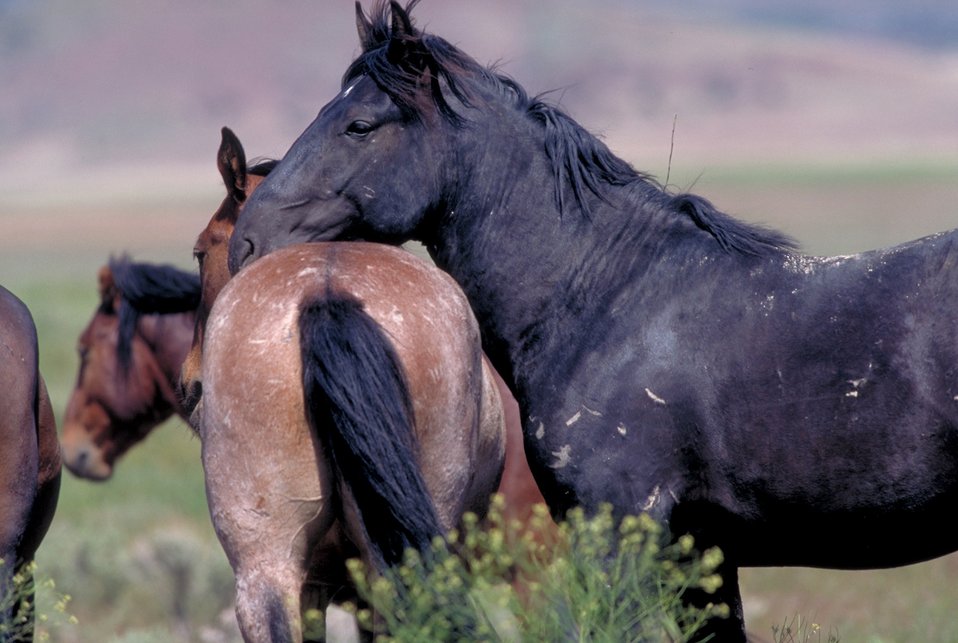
Onaqui Herd near Dugway, Utah.